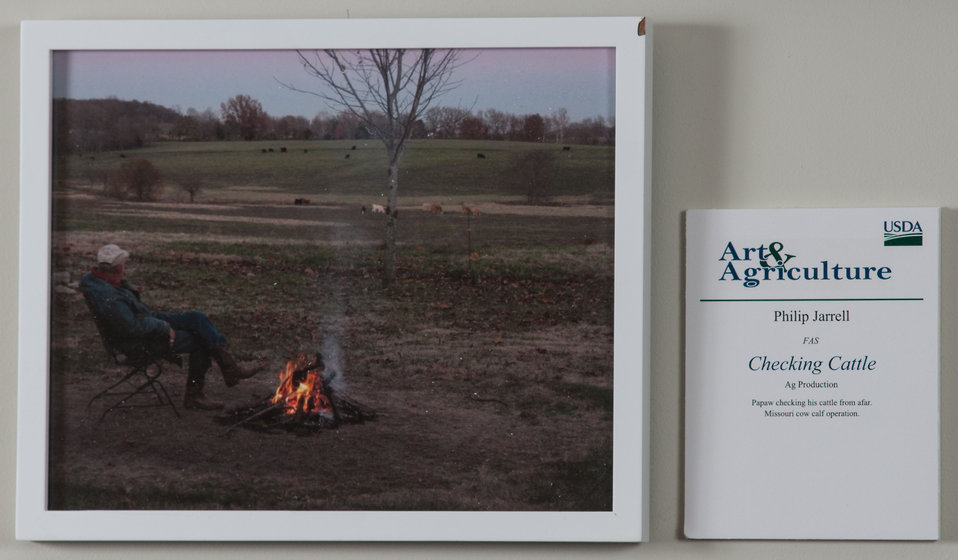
Online Viewer's Choice entries of the 2013 Art & Agriculture, Tuesday, July 9, 2013, in the South Building, Washington, D.C. Themes were expressed by employees from across the department and the contest was open to full-time and part-time USDA employees. Winning artwork will be displayed till the end of the year. U.S. Artistic expression is a creative outlet that is vital for an individual to grow and develop.